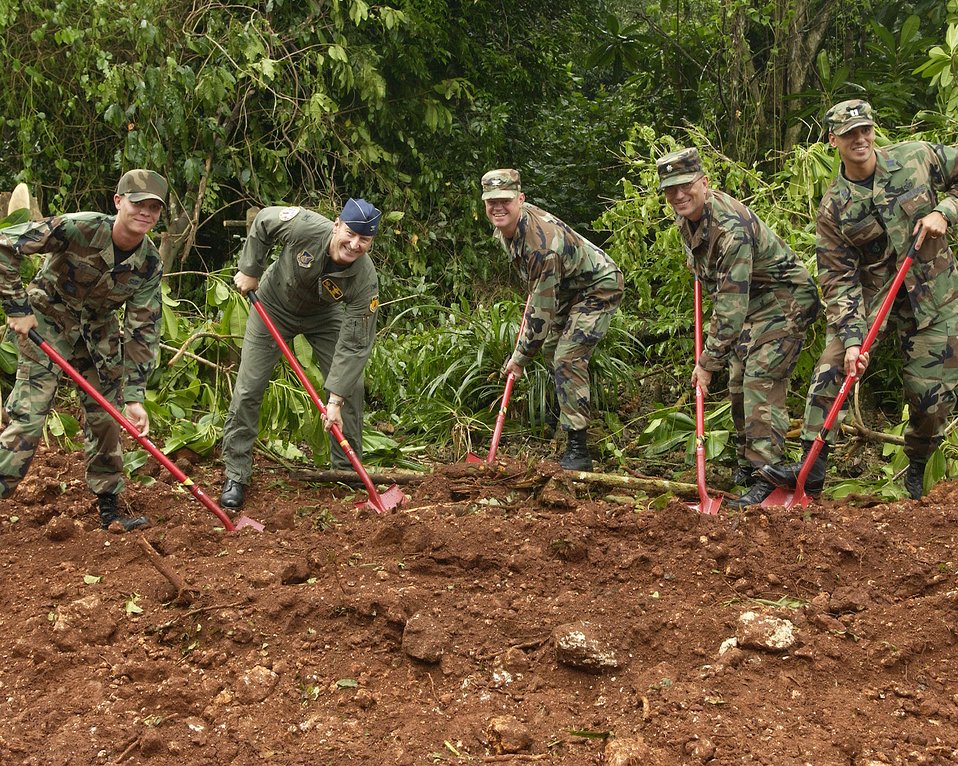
Ground breaking

Airmen break ground at the new Northwest Field Expeditionary Combat Support Training Campus site at Andersen Air Force Base, Guam Oct. 11. The entire complex will cost approximately $240 million and will be fully operational by 2016. In addition to housing the RED HORSE, the campus will also be home to Combat Communications, Commando Warrior and Silver Flag. From left: Airman Jeremy Rich, 554th Rapid Engineer Deployable Heavy Operation Repair Squadron Engineers; Col. Michael Boera, 36th Wing commander; Col. William Corson, Pacific Air Forces director of installation and mission support; Lt. Col. Keith Albrecht, 36th Contingency Response Group vice commander; and Capt. Craig Thomas, 554th RED HORSE Squadron officer in charge.